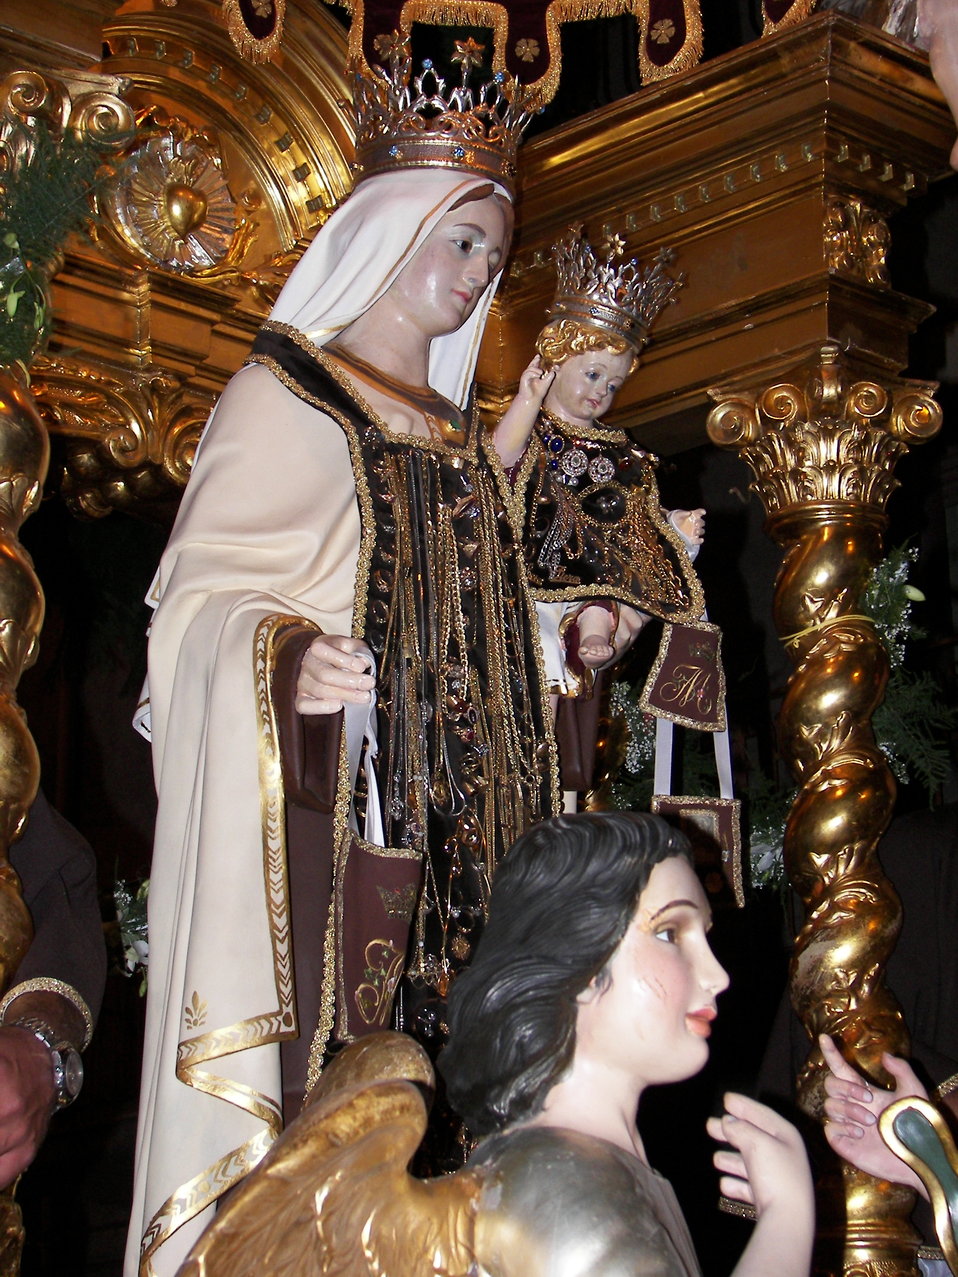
Italiano: Simulacro della Madonna del Carmelo. Santa Maria di Licodia